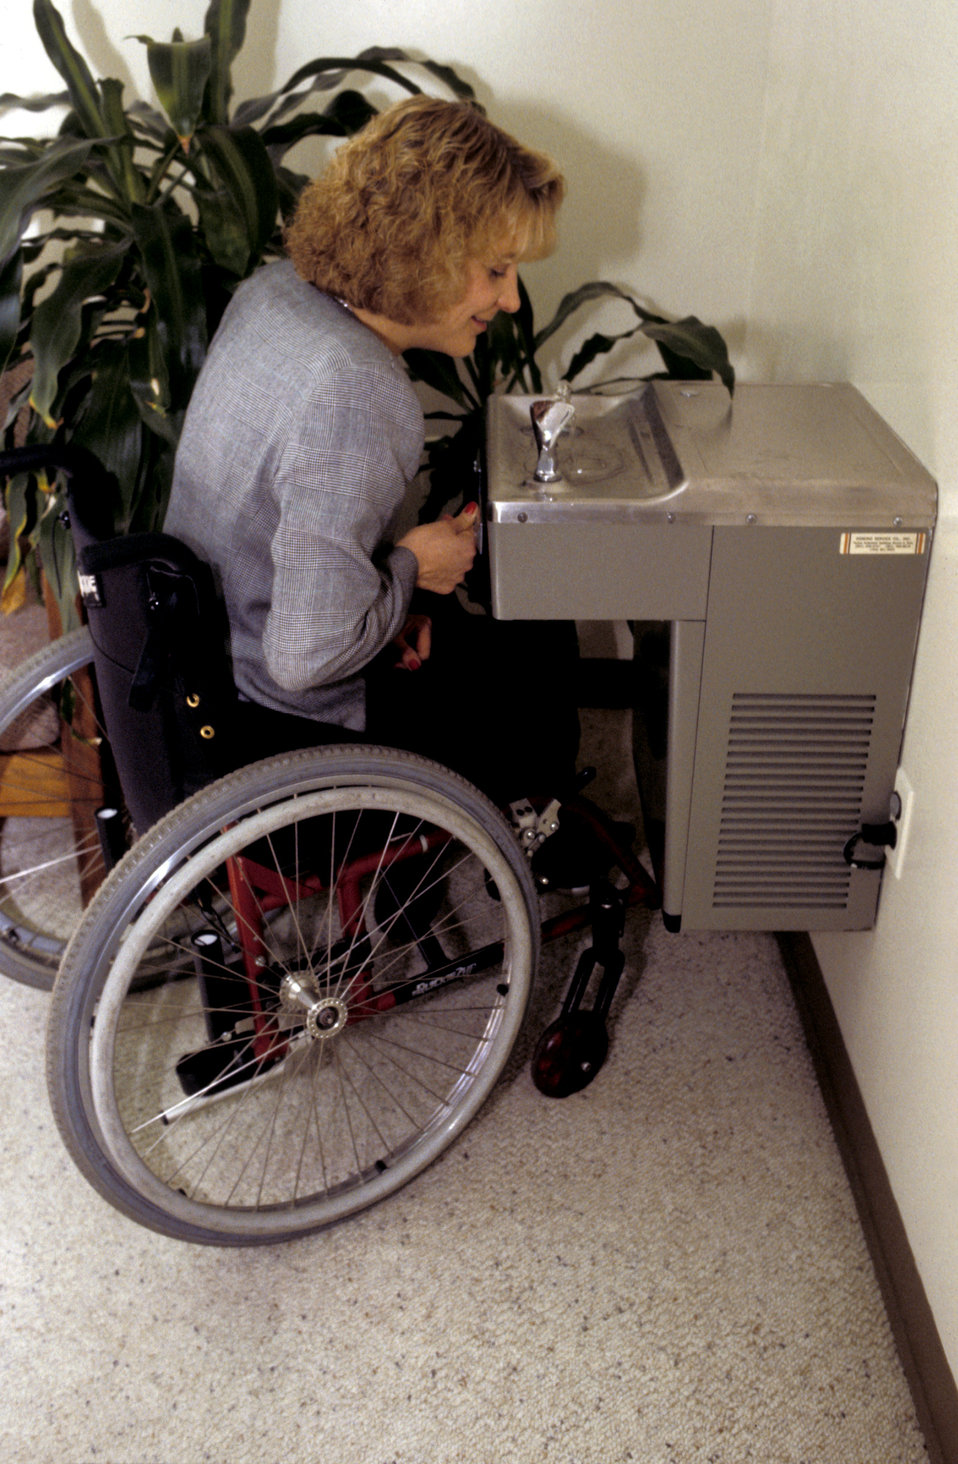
In this 1998 image, a wheelchair-seated woman was about to drink from a stainless steel water fountain which offered two spouts arranged at two different heights, showing that consideration was paid to those mobility-challenged individuals who found themselves in situations such as the one depicted here. Each projecting spout and basin extended out from the wall, and included knee space beneath. The rim-height of the lower unit was set at 30', while the rim height of the upper unit was set at 36'. Each displayed the international symbol describing universal accessibility. These two heights accommodated short and seated users, as well as standing users. It illustrated how sometimes, a single item cannot meet the needs of a broad cross-section of people. In this case a single, adjustable-height unit would have been too expensive to install. Each featured an easy-to-push operating panel on the font that allowed use by fingers, hands or another body part.